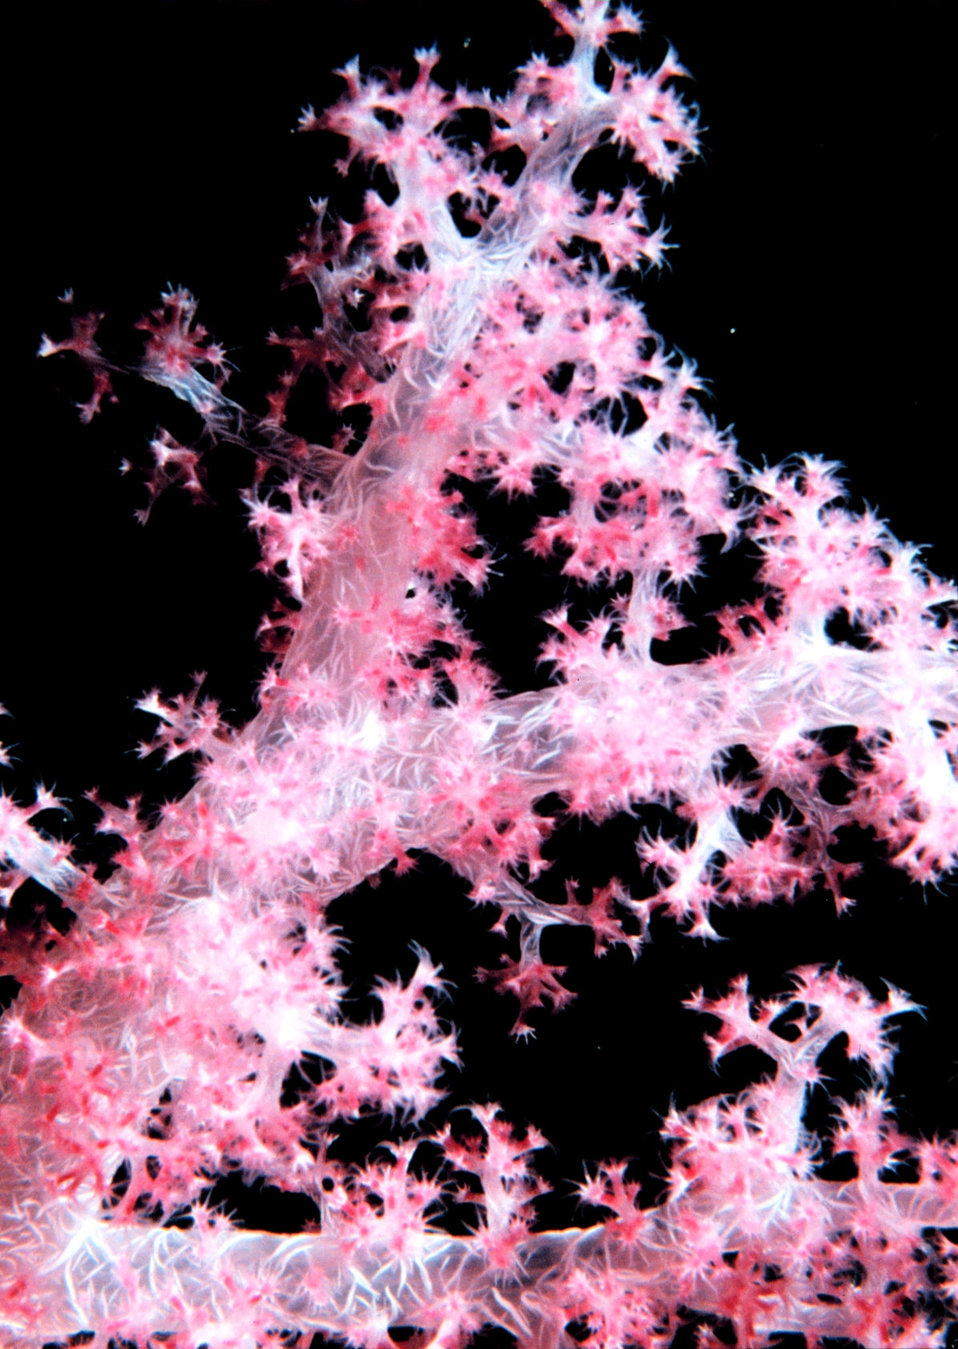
Carnation coral - Dendronephthya sp.